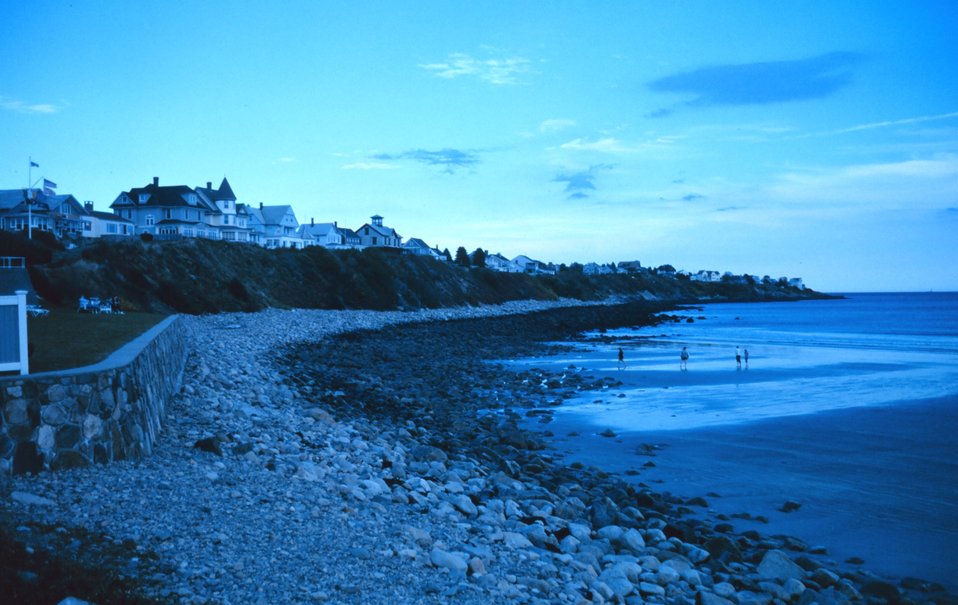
A view at low tide along the shore